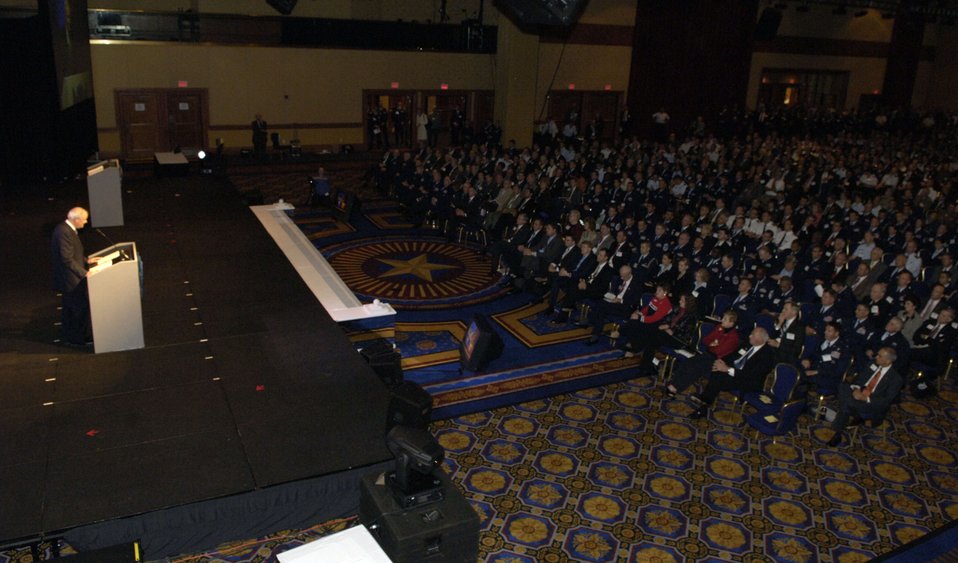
Air Force Association conference under way

Secretary of the Air Force Michael W. Wynne addresses the audience during his State of the Force remarks at the Air Force Association's Air & Space Conference and Technology Exposition on Sept 24 in Washington D.C. The conference will last for three days and will cover the newest technology and also have career enhancement seminars.